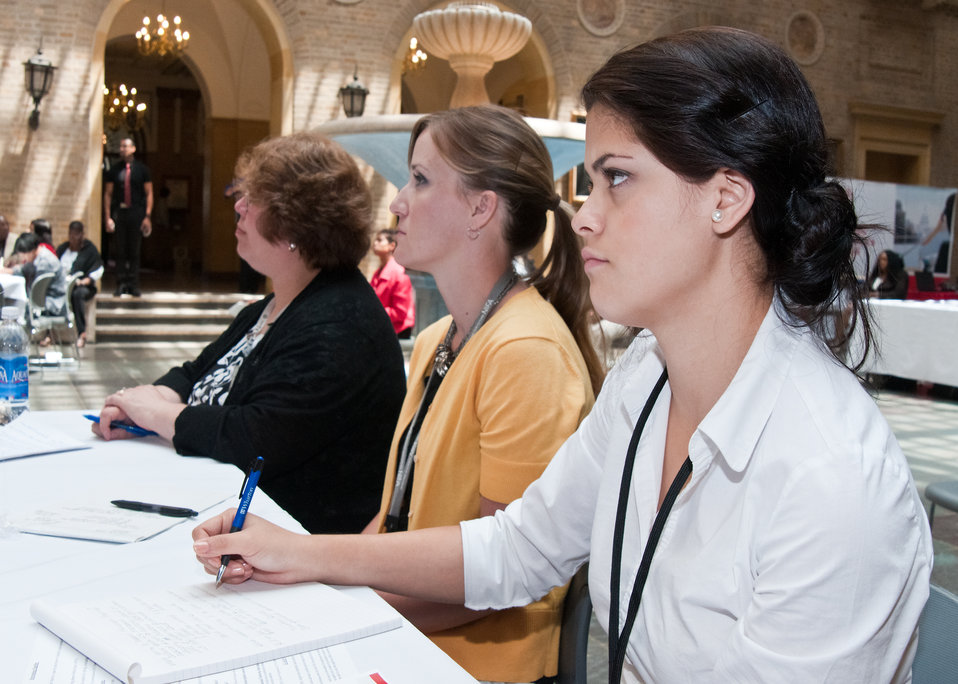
Elizabeth Parker, Agricultural Research Service, Kimberly Whittet, National Institute of Food and Agriculture and Anabel Ontiveros, an intern with the Office of the Inspector General, Diversity Management and Conflict Resolution listen to panel members during a “Telework Program Party/Brown Bag” event on the patio of the Jamie Whitten Building of United States Department of Agriculture, in Washington, DC, on Tuesday, June 7, 2011. The event included an interactive telework panel and exhibits from the field of telework, telecommuting and mobile work environments. The event was open to all USDA employees, supervisors, managers, human resources staff and USDA telework program coordinators.